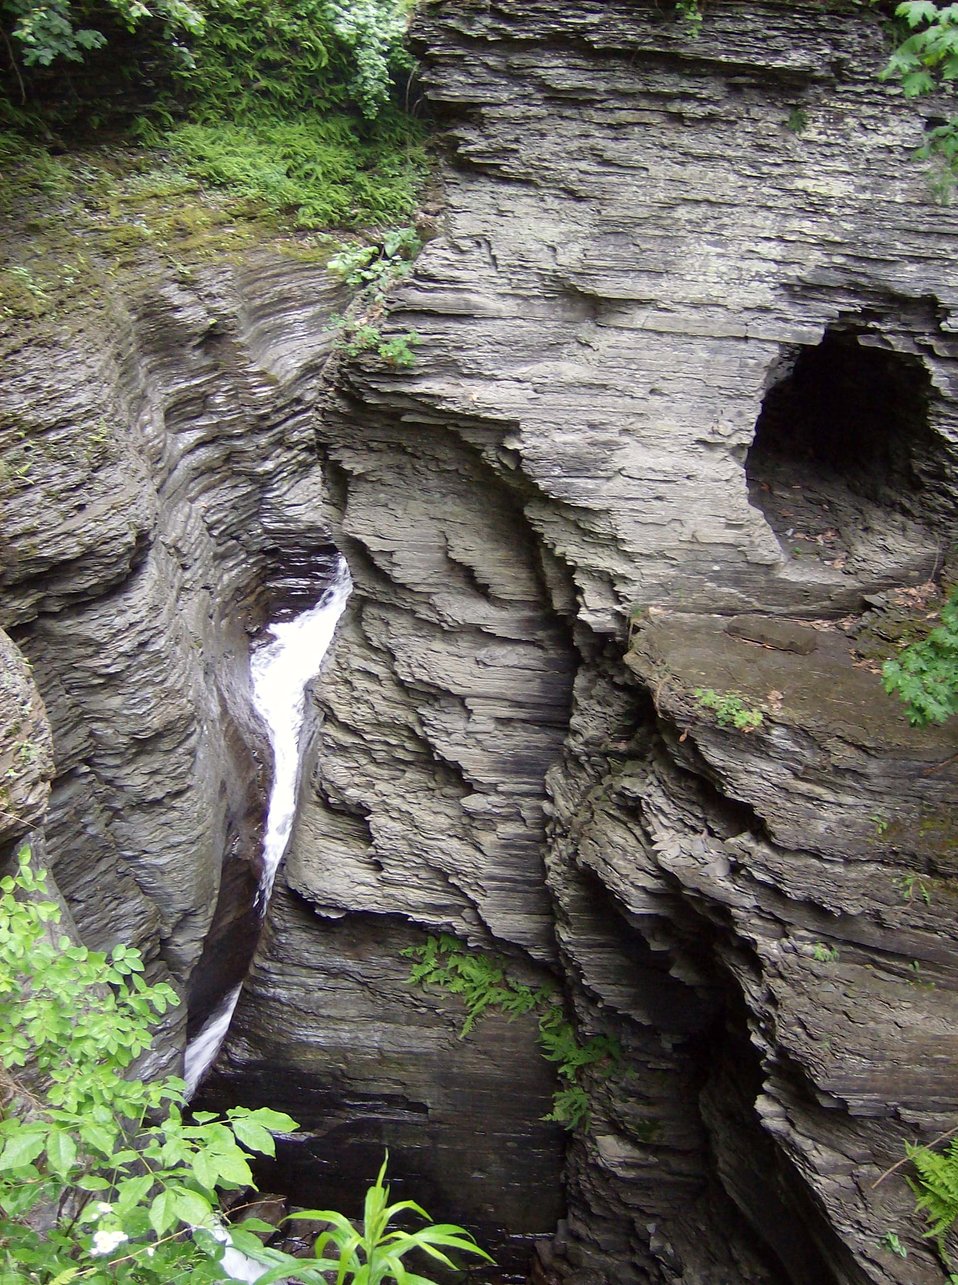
Stream following a steep and narrow canyon at Watkins Glen State Park.